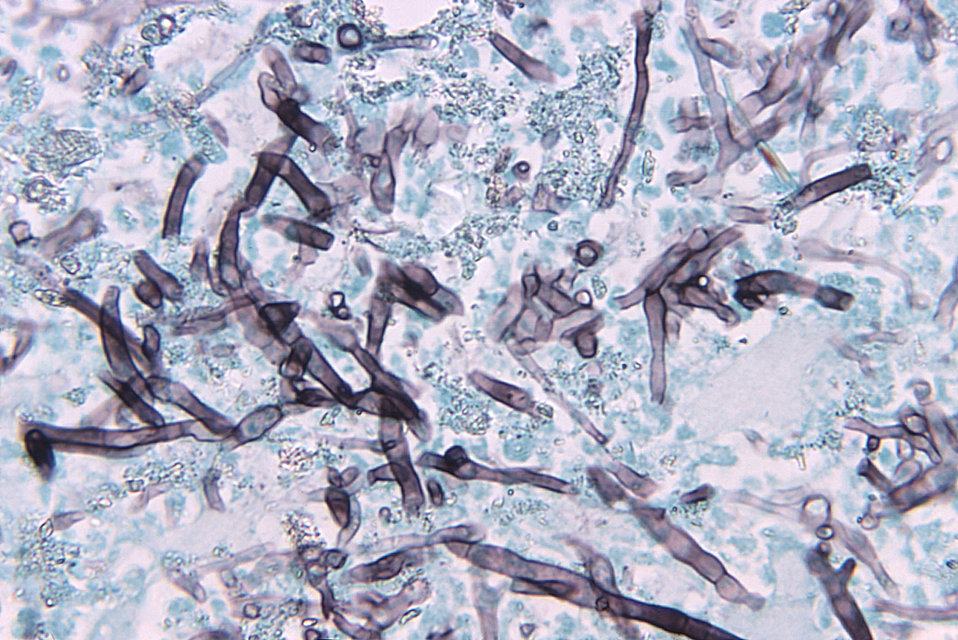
Under a magnification of 500X, this photomicrograph of a murine brain tissue sample revealed some of the histopathologic changes associated with a tissue reation due to the presence of the fungus, Bipolaris hawaiiensis, formerly known as Drechslera hawaiiensis. In this particular view you will note the numerous dark-walled, filamentous septate hyphae that are present.